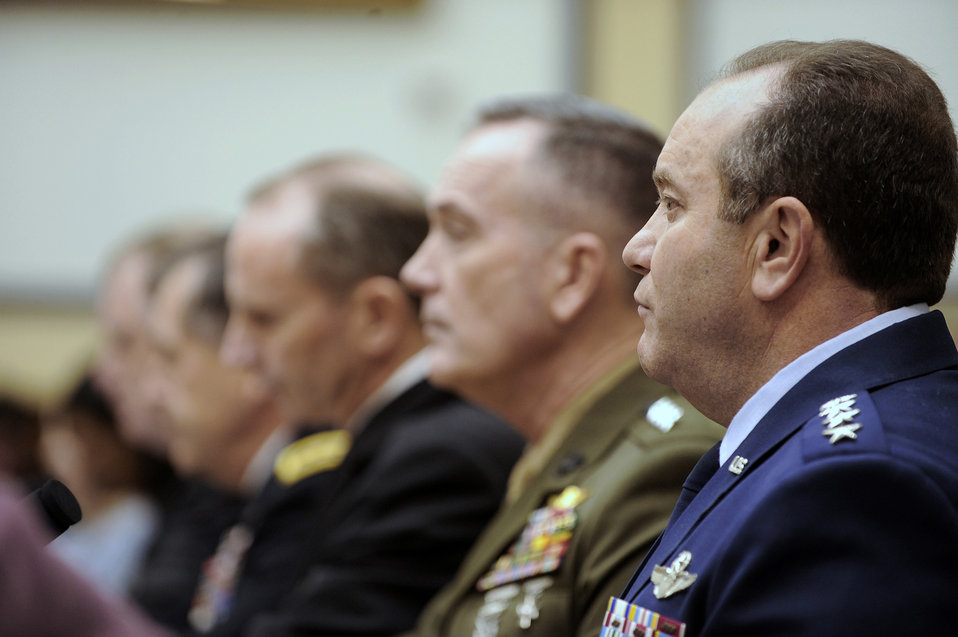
HASC Hearing on Efficiencies in DoD

Air Force Vice Chief of Staff Gen. Philip Breedlove (right) listens to opening comments during the House Armed Services Committee hearing on efficiencies in the Department of Defense on Capitol Hill, Jan. 26, 2011, in Washington. General Breedlove shared the witness stand with the the vice chiefs from the other services and Deputy Secretary of Defense William Lynn III.